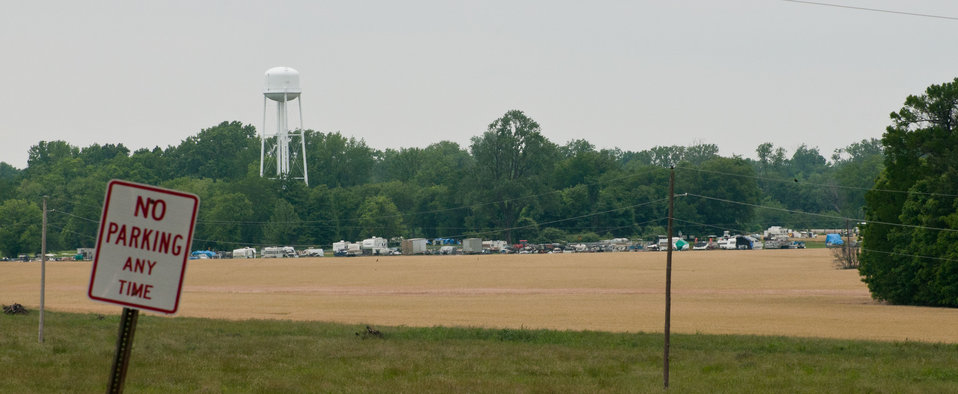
The entire population of Tunica Cutout, MS was relocated to a nearby protected side of the Mississippi River. Flood waters inundated Tunica Cutout, MS, on Sunday, May 15. 2011.